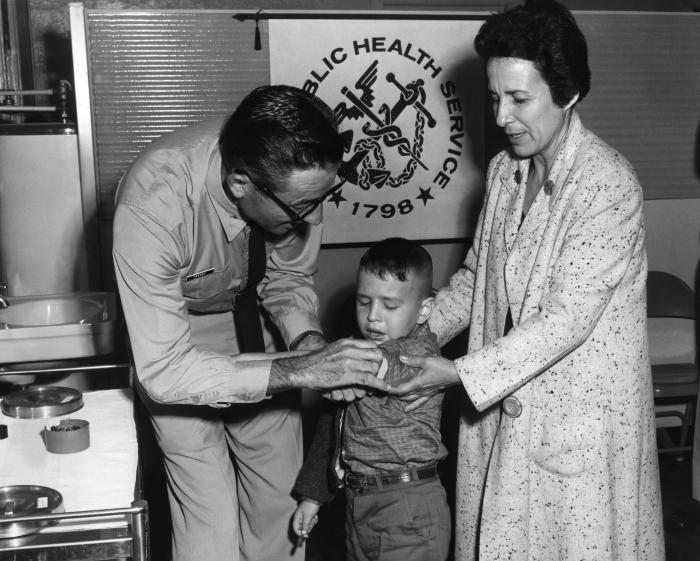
This photograph showed a U.S. Public Health Service (PHS) representative in the process of immunizing a Cuban boy after the boy's 1965 arrival in Miami, Florida during that year's Cuban mass-emigration.